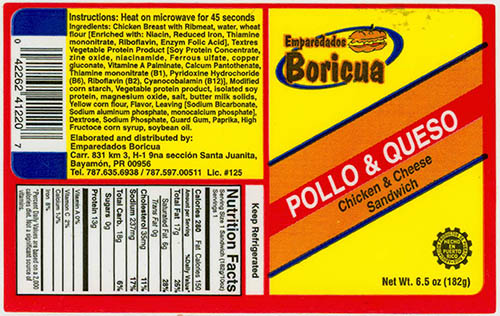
RECALLED – Chicken and Cheese (Pollo and Queso) Sandwich

April 3, 2014 – Product Recall – Emparedados Boricua Issues Allergen Alert For Its Products 'Emparedados Boricua - Chicken and Cheese'.